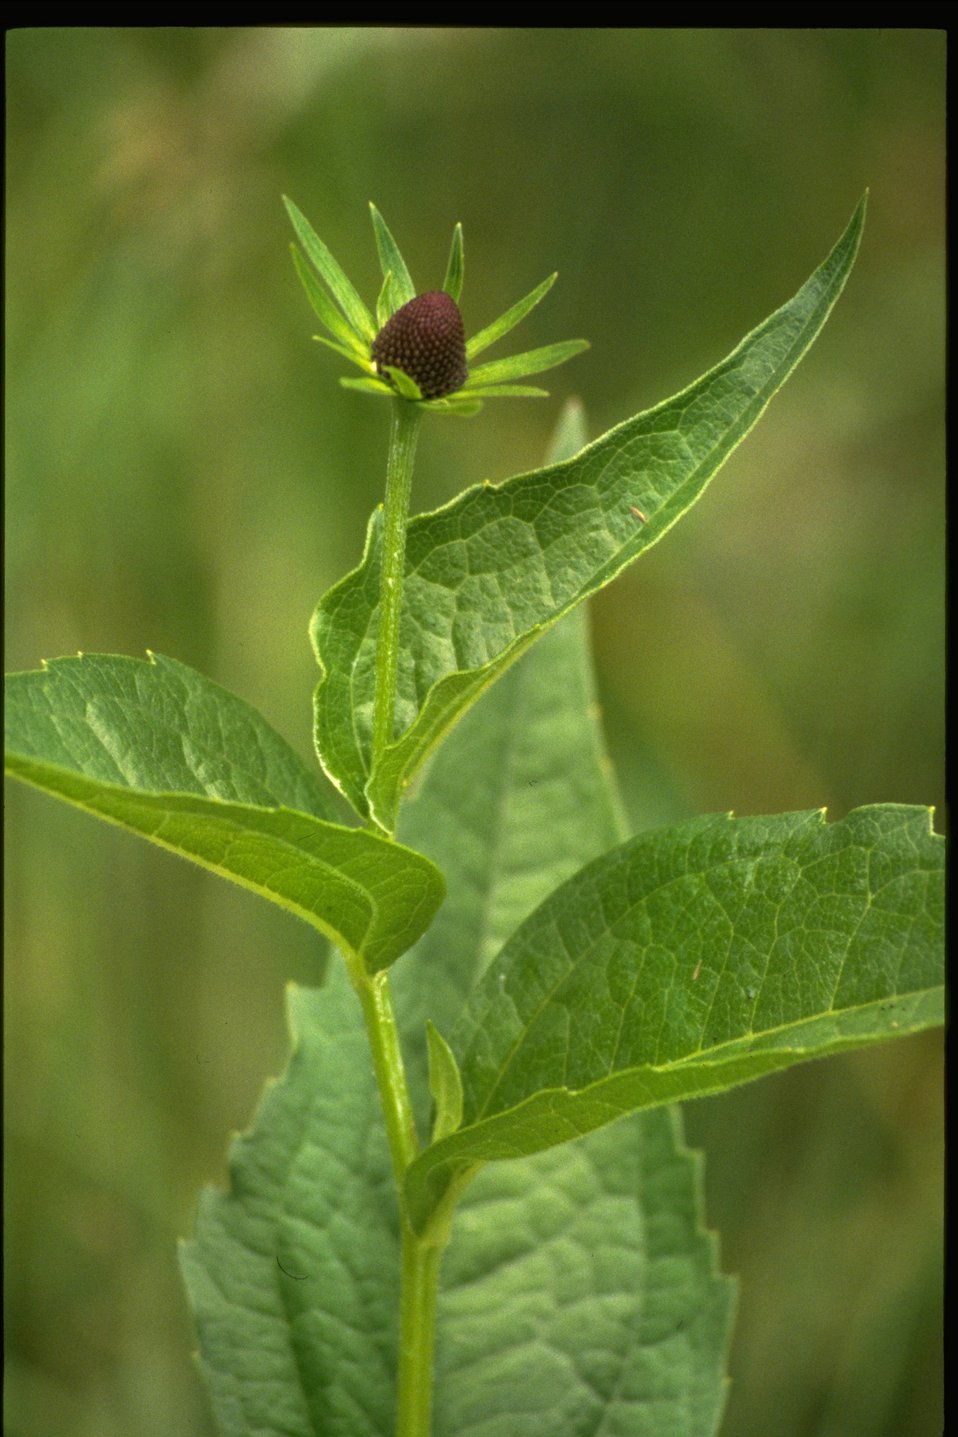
Medium shot of Rudbeckia occidentalis.